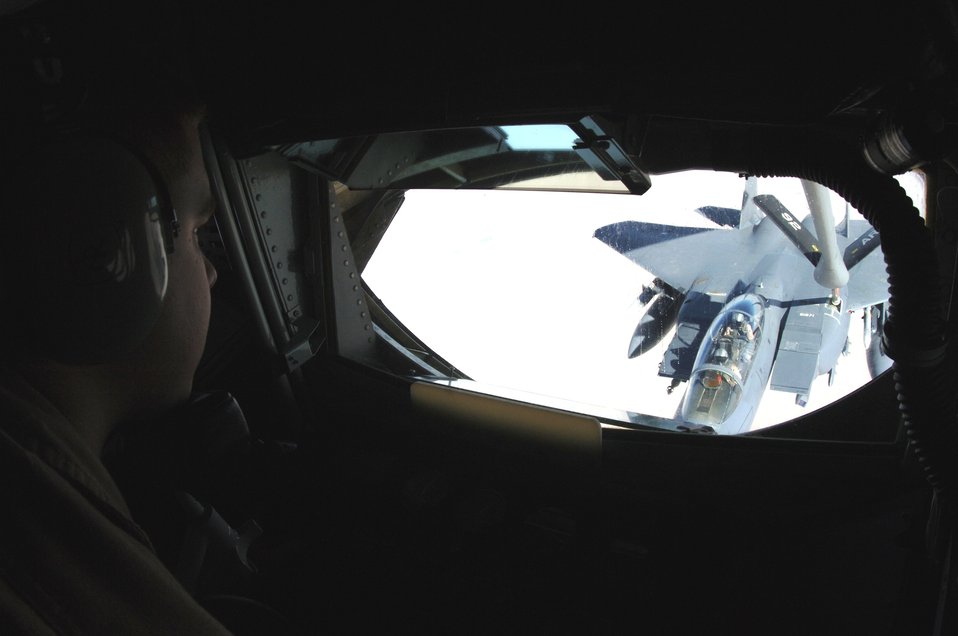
A view to a refuel

An F-15E Strike Eagle from the 336th Expeditionary Fighter Squadron is refueled over Southwest Asia by a KC-135 Stratotanker from the 340th Expeditionary Air Refueling Squadron on Tuesday, April 11, 2006. The F-15E is deployed from Seymour Johnson Air Force Base, N.C., and the KC-135 is from Fairchild AFB, Wash.